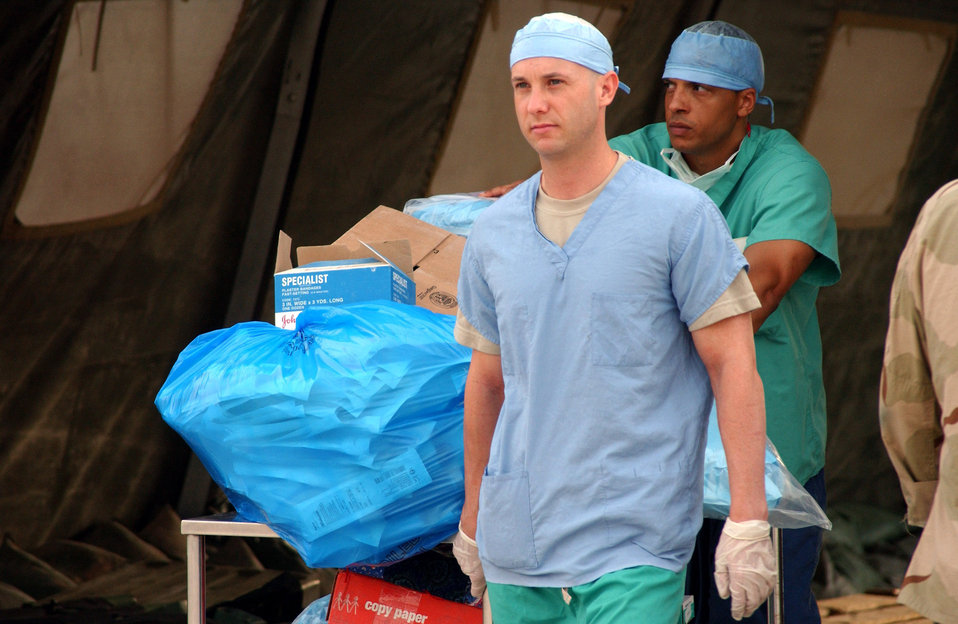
Balad's medics move into new facility

Senior Airman James Ray and Tech. Sgt. Christopher Harwell move operating room equipment from the 332nd Expeditionary Medical Group's Air Force Theater Hospital's tent facility to its newly upgraded, pre-engineered facility at Balad Air Base, Iraq, Aug. 3. Starting at 4 a.m., about 150 base volunteers and 380 332nd EMDG Airmen moved patients and equipment to the new facility. Airman Ray and Sergeant Harwell are surgical technicians assigned to the 332nd EMDG.